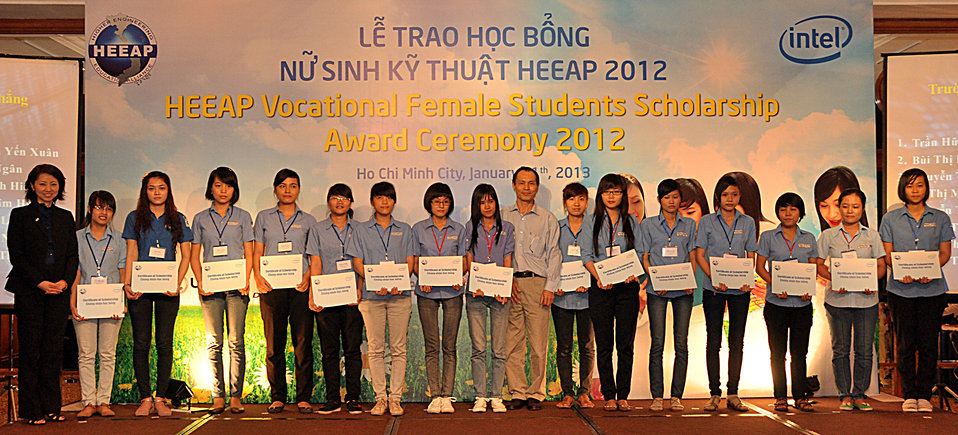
Female Vocational Student Scholarship Ceremony

January 11, 2013, Ho Chi Minh City